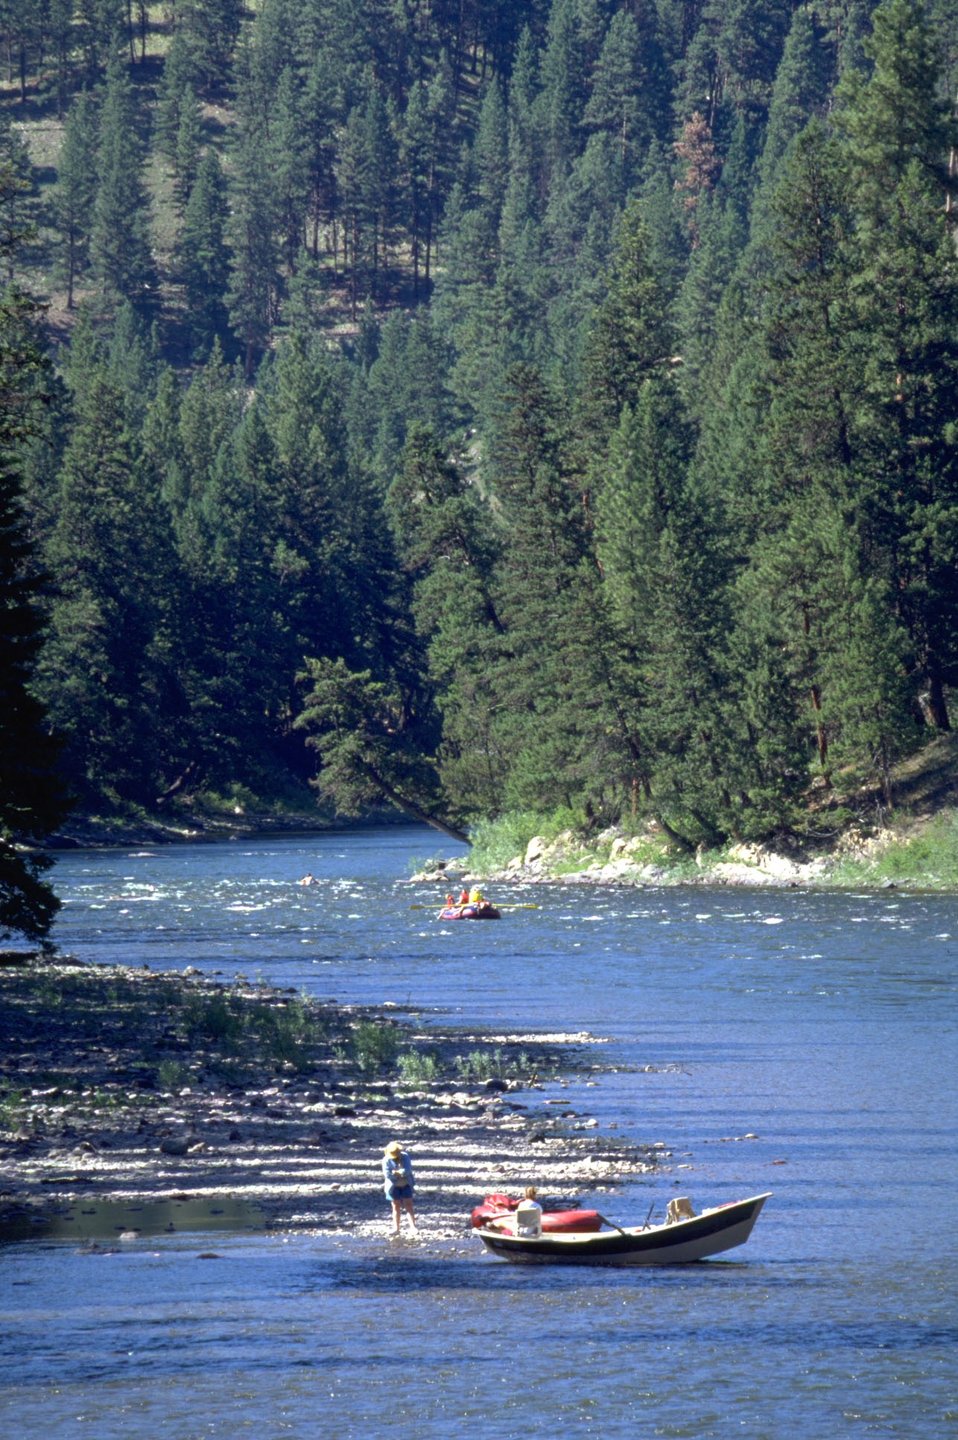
Blackfoot River